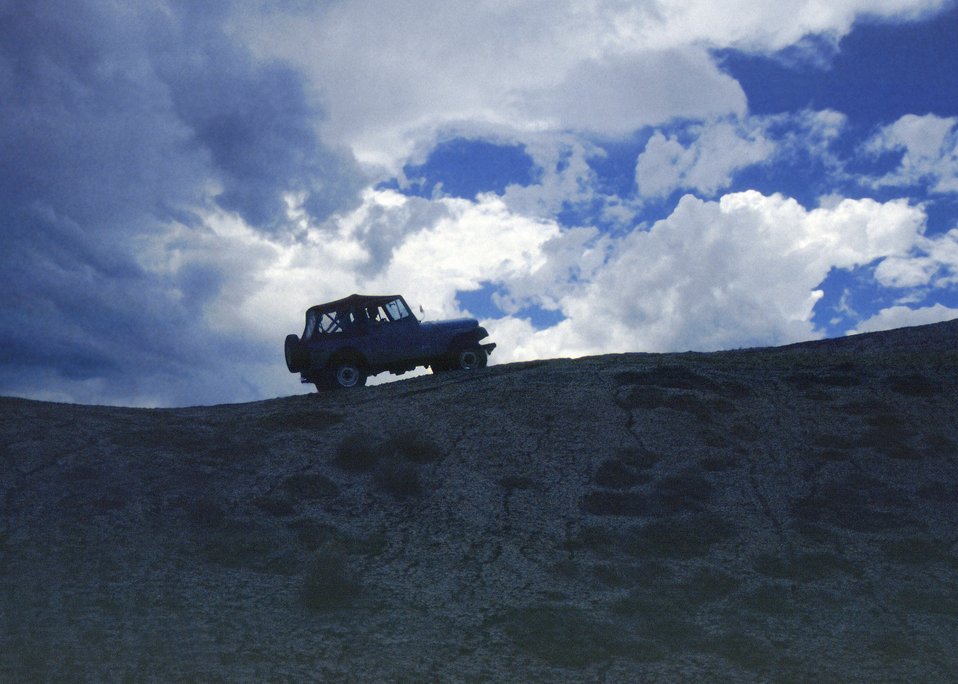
Four Wheel Driving